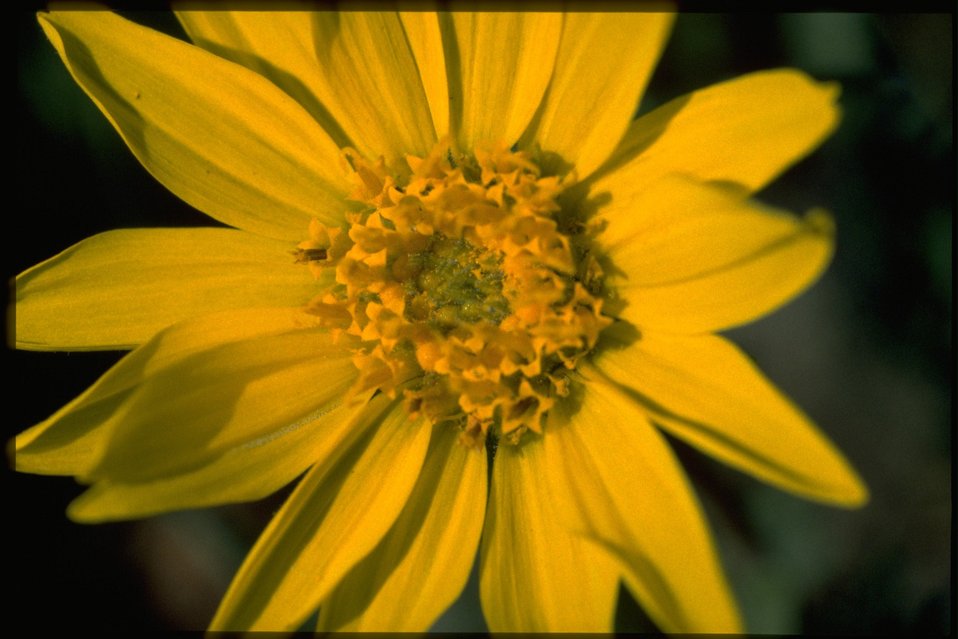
Closeup shot of Hooker's Balsamroot wildflower (Balsamorhiza Hookeri).